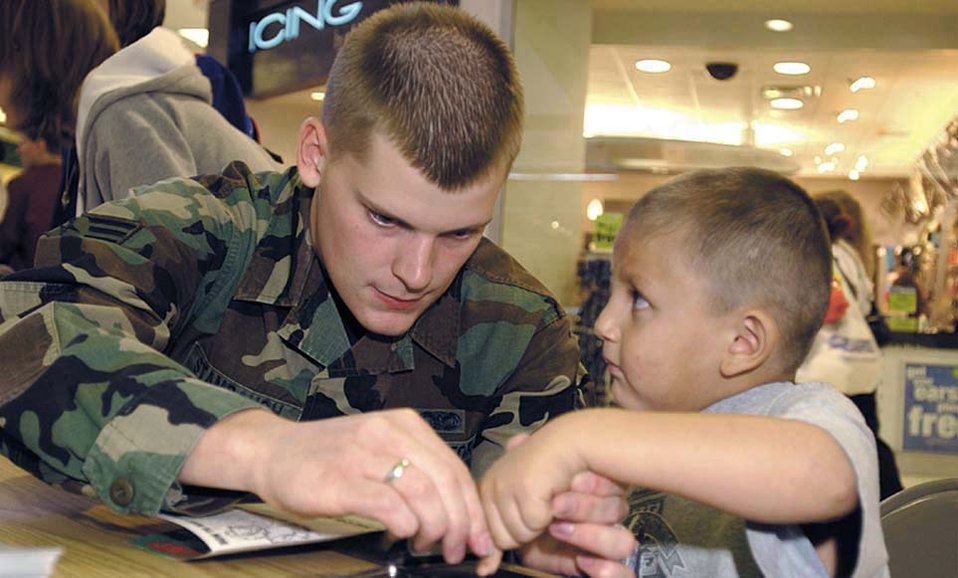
Printing press

MINOT, N.D. -- Senior Airman Jason Stambaugh fingerprints a child at a mall here Oct. 2. He and other Airmen from the 5th Security Forces Squadron at nearby Minot Air Force Base teamed up with people from the Minot Police Department for the annual event. This year, they photographed and fingerprinted 925 children.